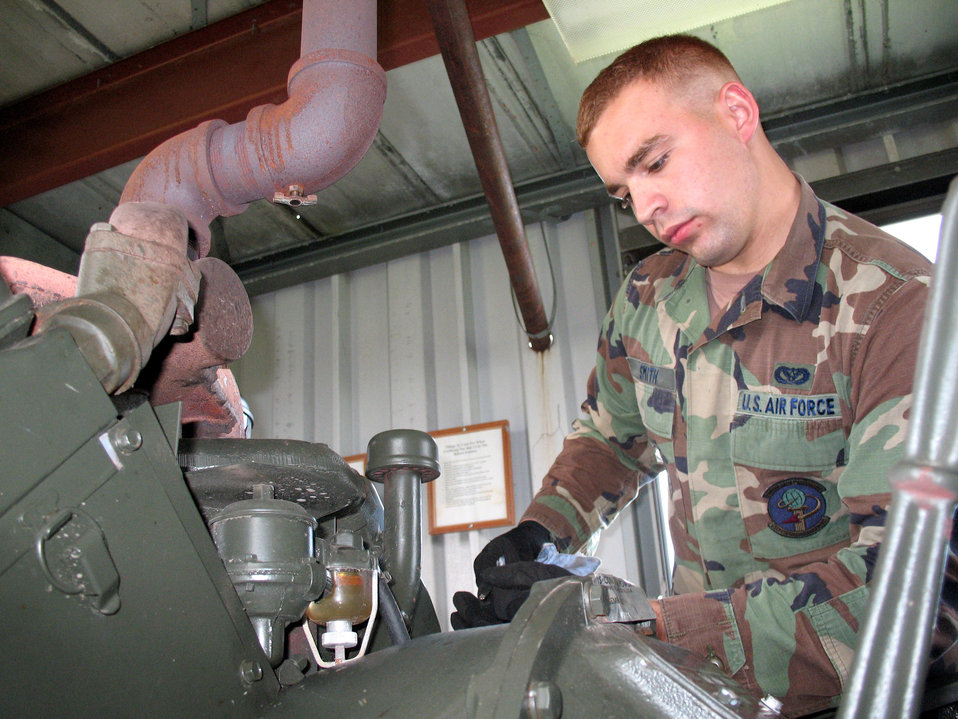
Lajes Airmen can stop a speeding plane

Senior Airman Wade Smith checks the oil in the generator that runs the barrier arresting kit May 18 at Lajes Field, Azores. Civil engineering Airmen from Lajes Field's power production shop stand to stop aircraft with brake and engine failures.